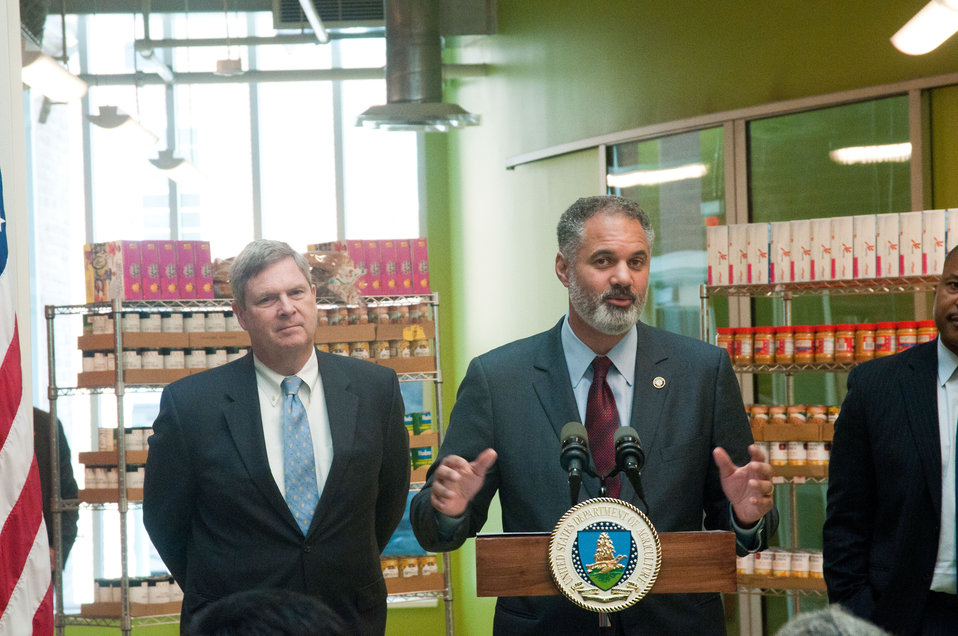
Corporation for National and Community Service CEO Patrick Corvington (at podium), Agriculture Secretary Tom Vilsack Thursday (left), and Bread for the City President George Jones announced that the U.S. Department of Agriculture will become champions to end hunger and innovative partnerships to address hunger, especially among children, at Bread for the City, in Washington, DC, on Friday, April 29, 20ll.